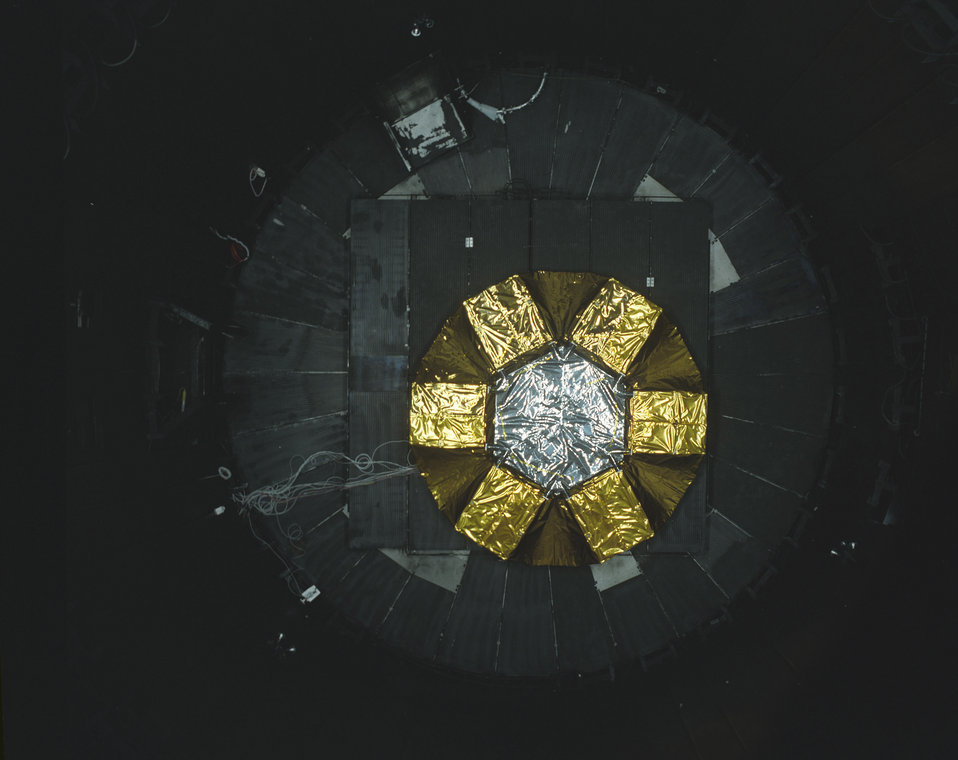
Space Technology

dhffrrhfddrrrrr